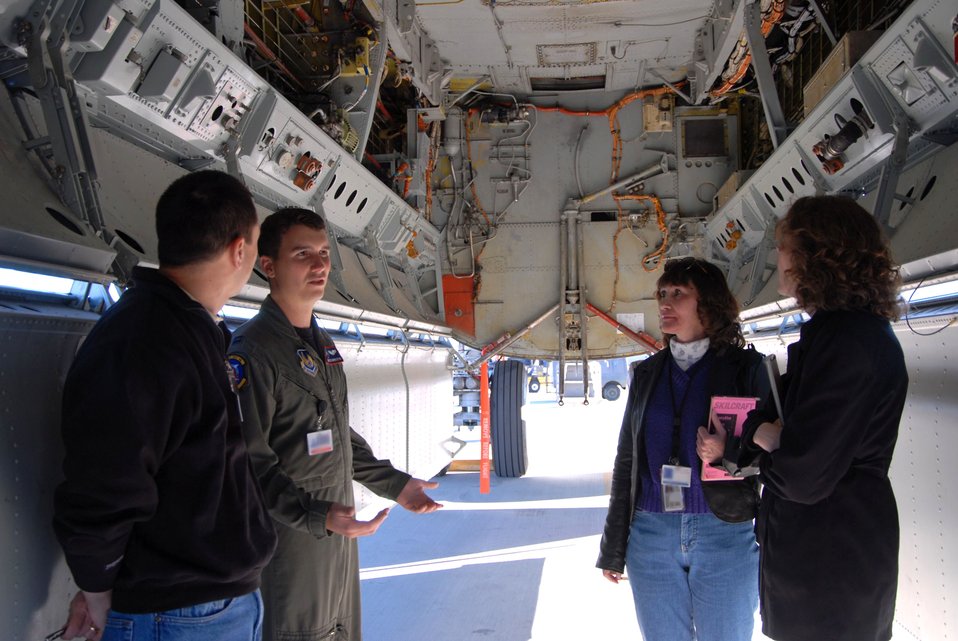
University of Idaho students study human factors on B-52 Stratofortress

Capt. Miles Middleton shows equipment in the weapons bay of a B-52 Stratofortress to students from the University of Idaho. The students are studying advanced human factors, and familiarization with the bomber is part of a class project. Captain Middleton, a B-52 pilot, is the 419th Flight Test Squadron B-52H test project officer.